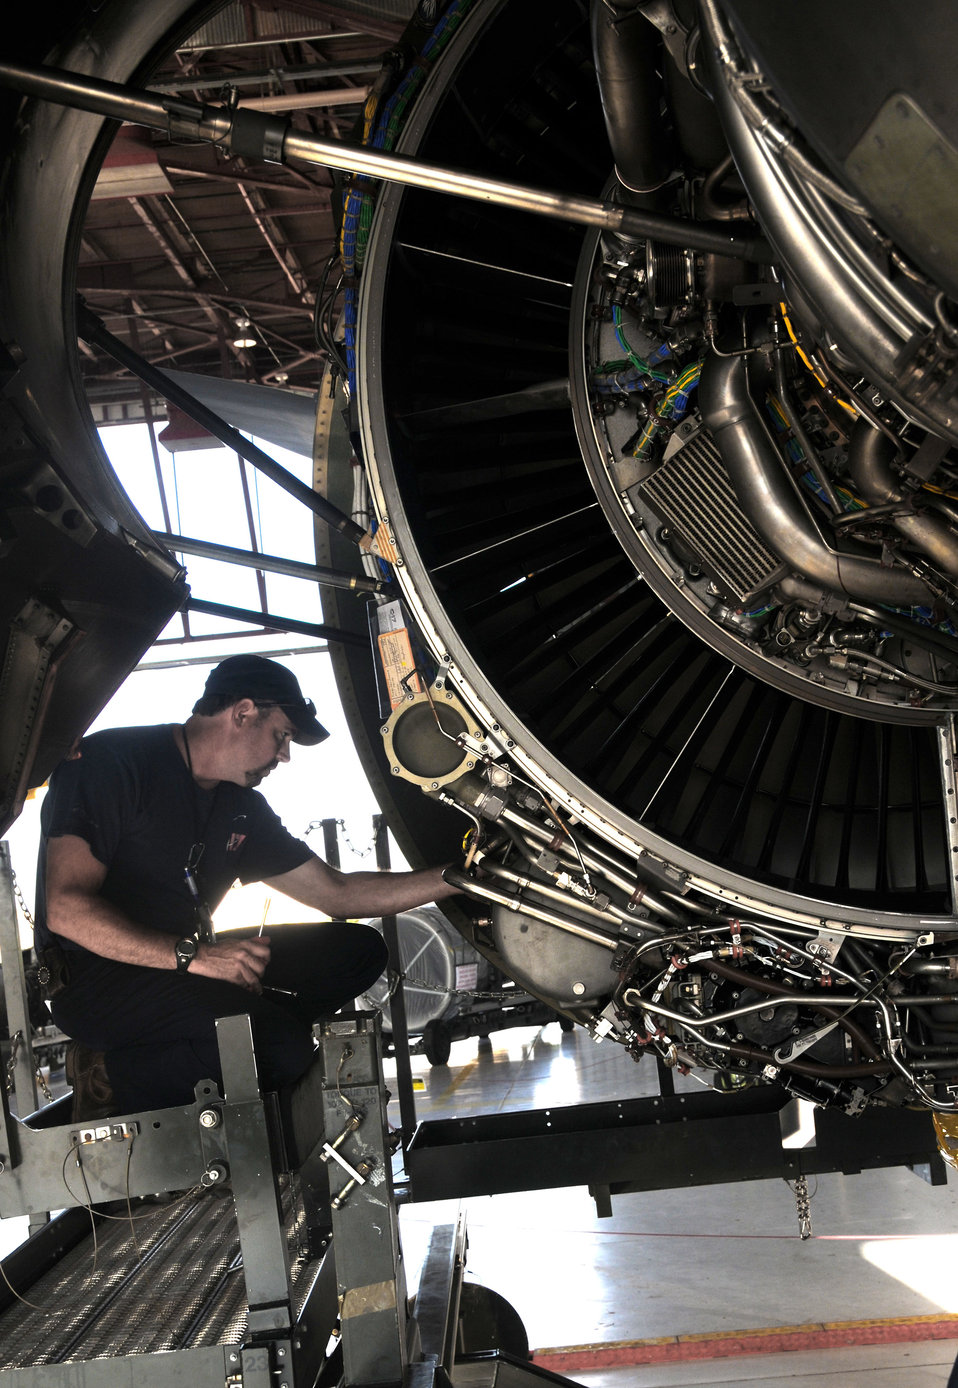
New engine

Ron Lucas works on an engine replacement for a C-17 Globemaster III during a home-station check June 9 at Altus Air Force Base, Okla. Mr. Lucas is a 97th Maintenance Directorate C-17 jet engine mechanic.